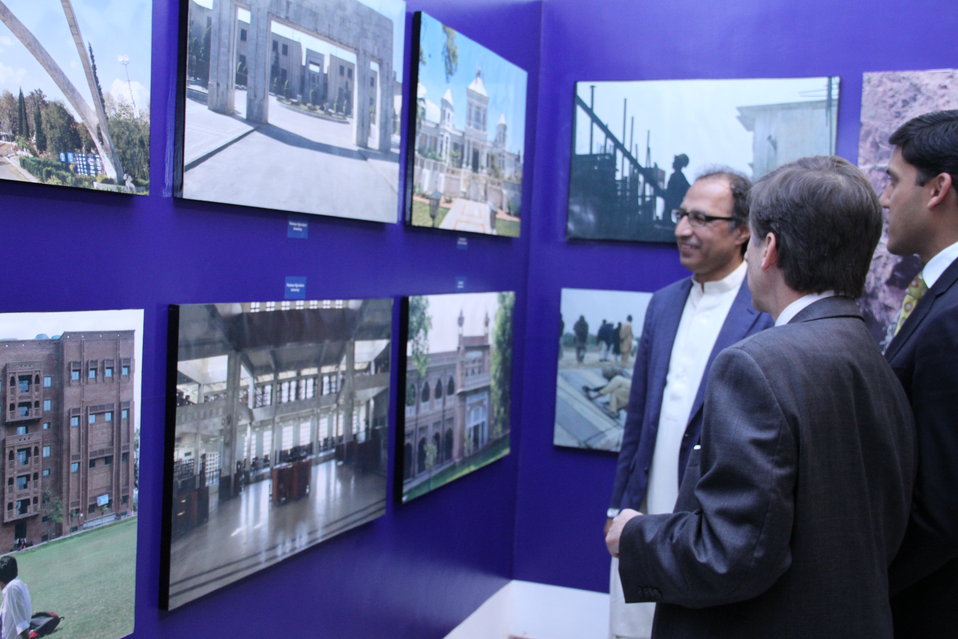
Photo Exhibition Celebrate US-PAK Cooperation at PNCA, Islamabad on April 13, 2012